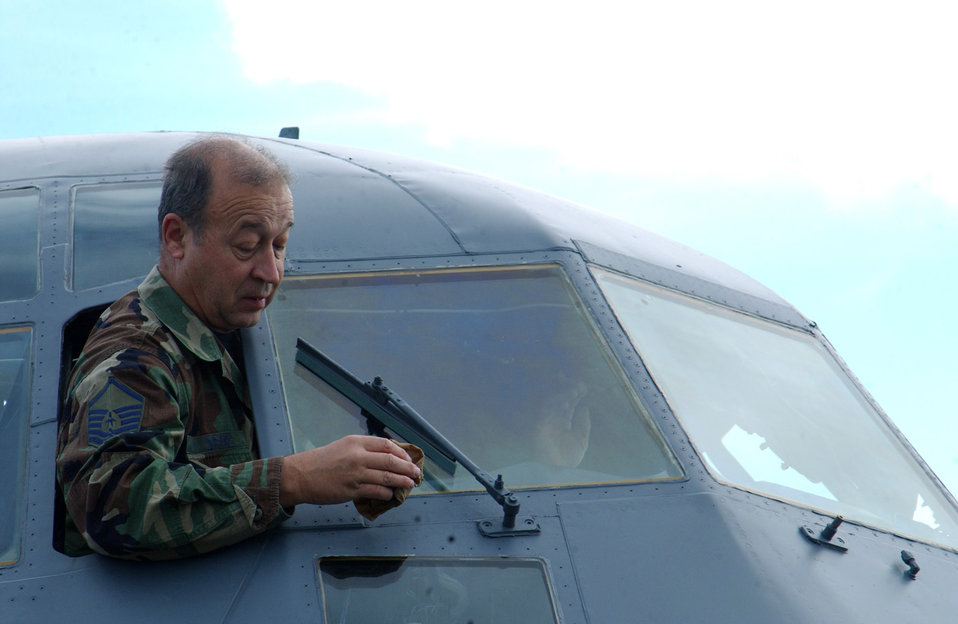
Adios Unitas

PUNTA DEL ESTE, Uruguay -- Master Sgt. Rodney Drake wipes down the windshield of an MC-130P Combat Shadow before a flight here for Unitas 2004. The exercise, which ended Nov. 17, is the largest and longest-held naval exercise in the Americas. Sergeant Drake is a production superintendent assigned to the 719th Maintenance Squadron at Eglin Air Force Base, Fla.